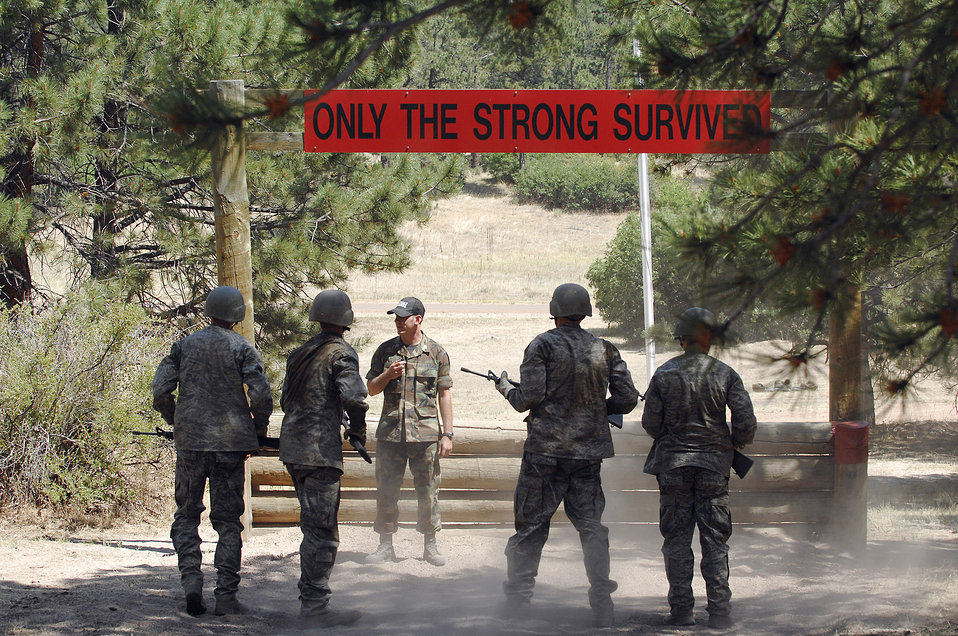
New cadets discover Jacks Valley

U.S. Air Force Academy basic cadets receive instruction from a cadre member July 16 prior to crossing the final obstacle of the assault course at the Jacks Valley training area near Colorado Springs, Colo., during the field training portion of basic training.